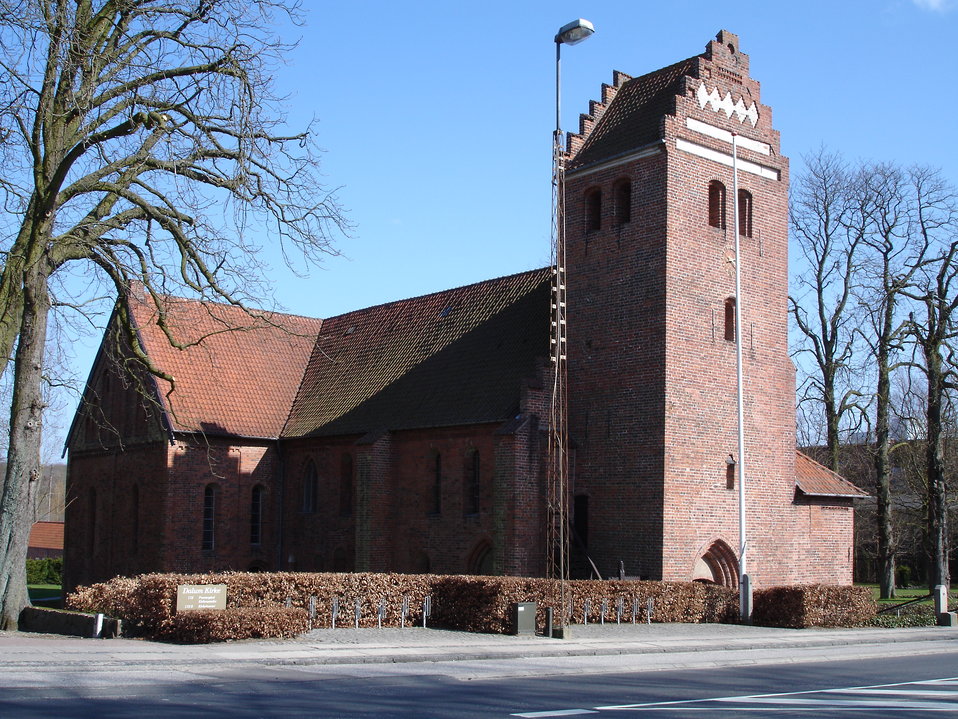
Dalumkrike